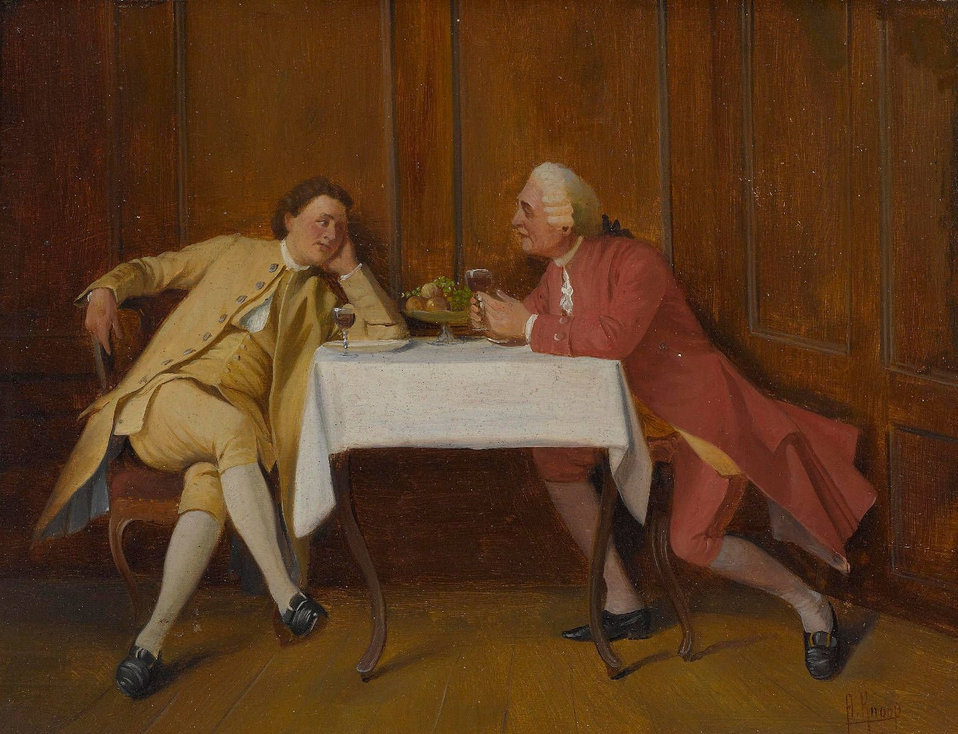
Rokoko-Kavaliere im angeregten Gespräch. Sgniert. Öl auf Holz. 16 x 21 cm